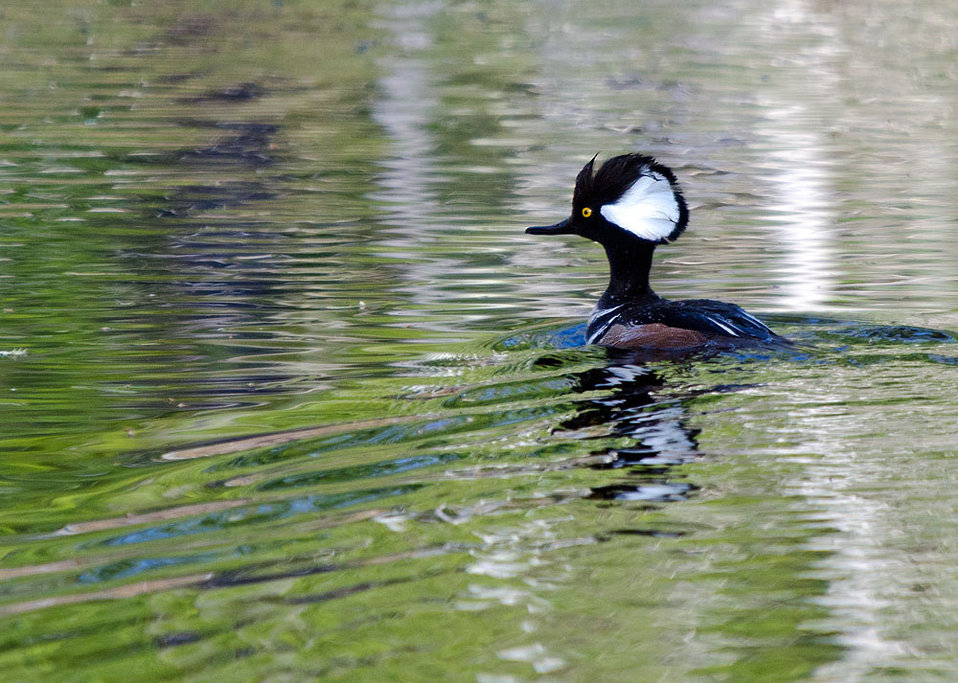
Merganser

Great Bay National Wildlife Refuge, MA.